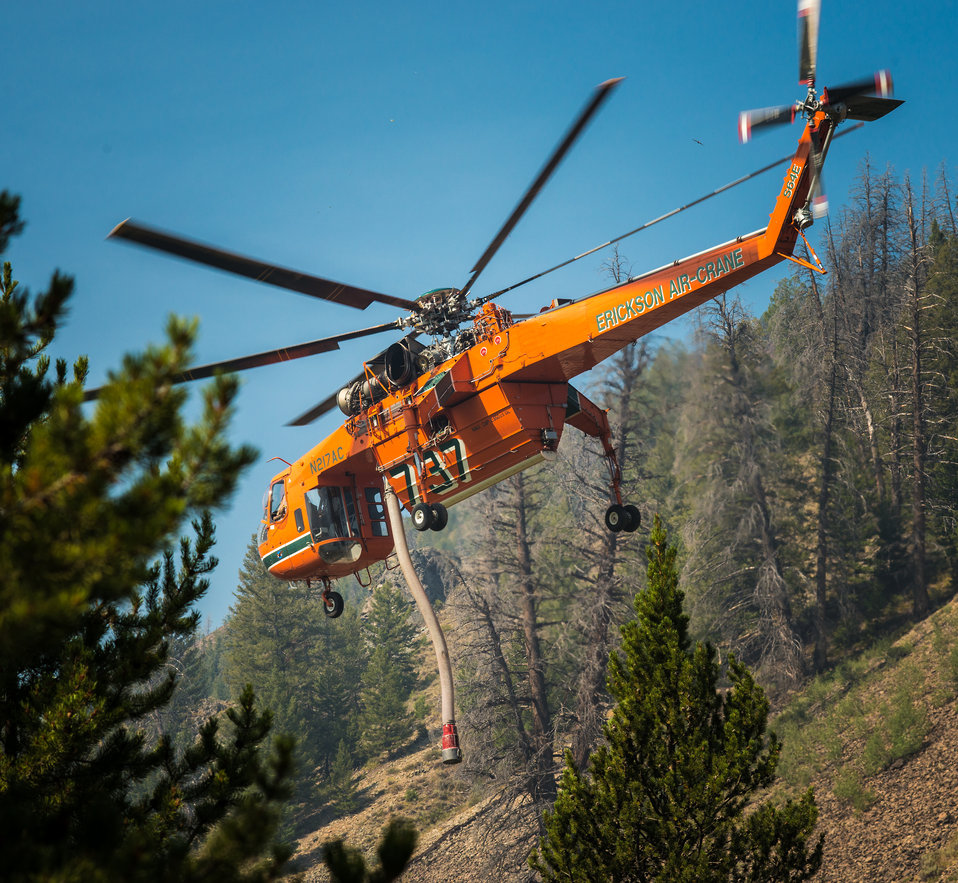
An Erickson Air-Crane's 'Helitanker 737' Skycrane climbs into the sky after using a hose pump to fill it triangular shaped tank with water from the East Fork of Baker Creek, to fight the Beaver Creek Fire, northwest of Hailey, ID, on Tuesday, Aug 20, 2013. The S-64F Aircrane Helicopter serves as a Type-1 Helitanker. The specialized aircraft is designed specifically for lifting. It's two turbine engines develop a maximum total of 9,600 SHP that turns a 72 foot main rotor, lifting a maximum hook weight of 25,000 lbs. For firefighting purposes, the designed weight of the loaded Fire Tank with water, is less than it's maximum load, to provide better flight performance in mountainous terrain.